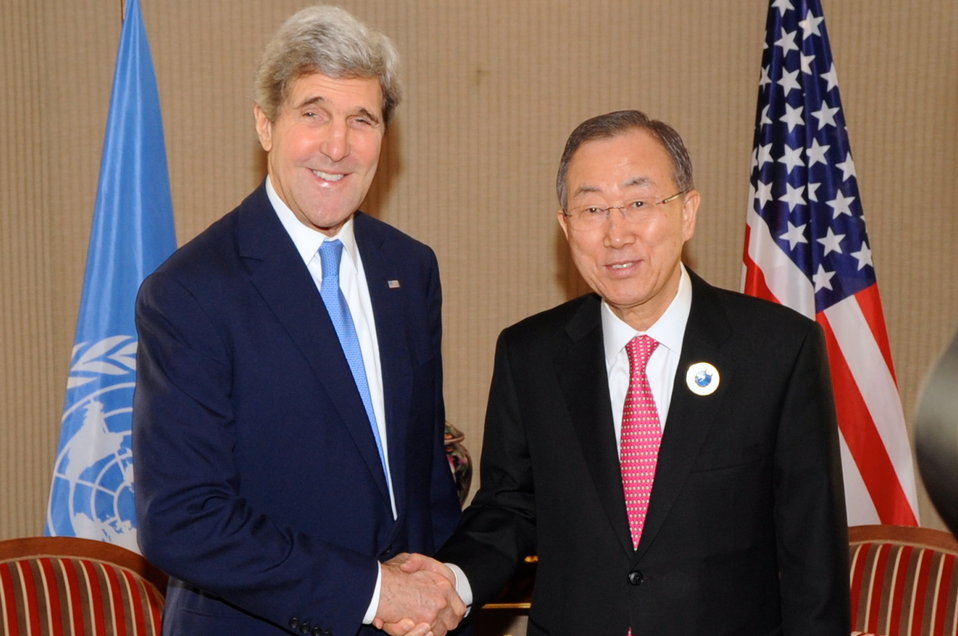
Secretary Kerry Meets With U.N. Secretary-General Ban at Syria Donors' Conference

U.S. Secretary of State John Kerry shakes hands with United Nations Secretary-General Ban Ki-moon for a private discussion before the Syria Donors' Conference convened in Kuwait City, Kuwait, on January 15, 2014.